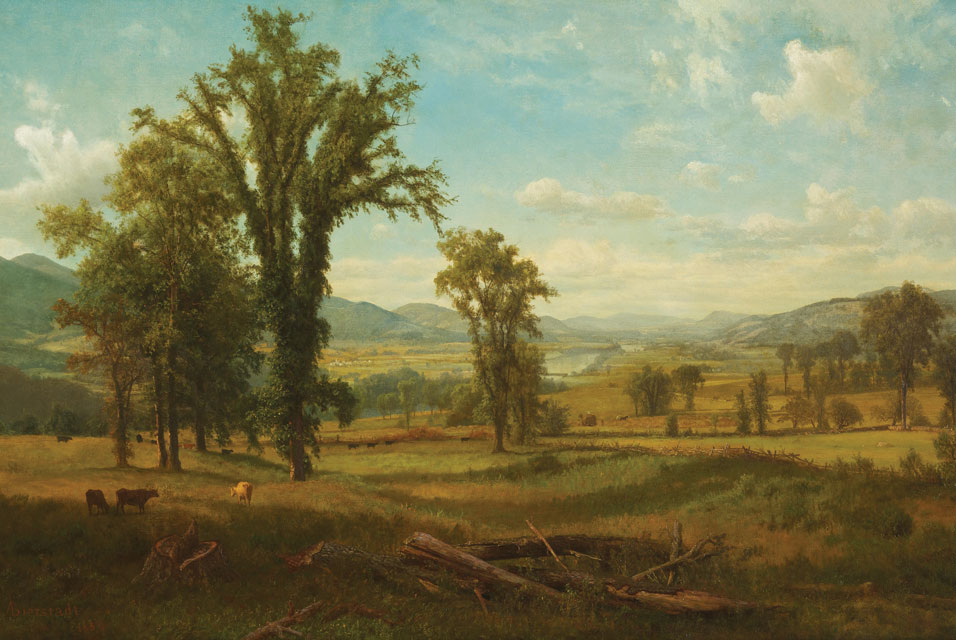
'Connecticut River Valley, Claremont, New Hampshire' by Albert Bierstadt, 1868 or 1865, Berkshire Museum